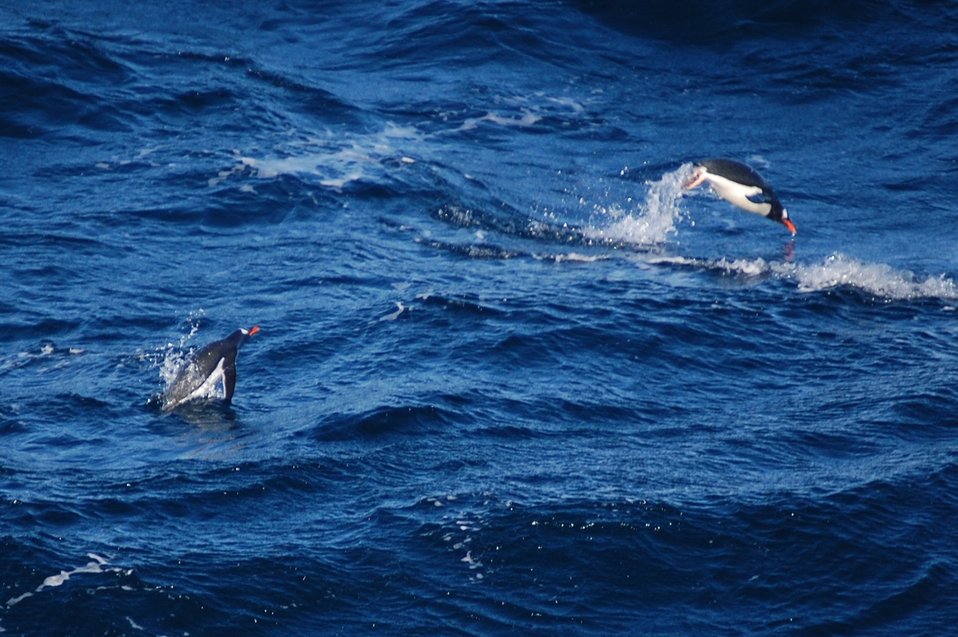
Gentoo penguins.